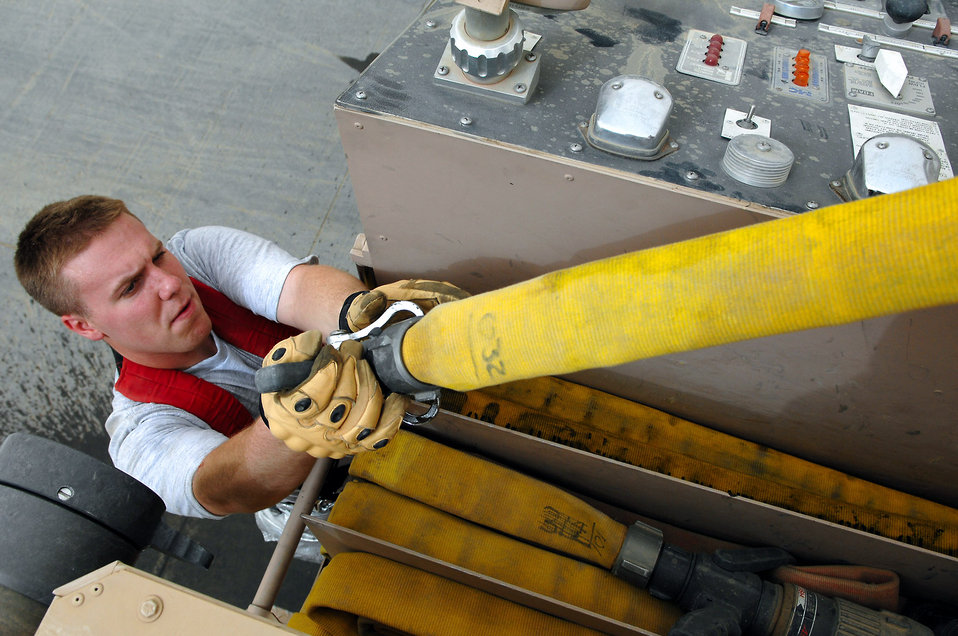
Firefighting is a joint venture

Airman 1st Class Adam Baumgardner wraps up a hose after completing advancement and pump training April 29 at Balad Air Base, Iraq. Training on a daily basis helps firefighters stay mission ready at all times. The fire station on Balad AB is composed of both Army and Air Force members who work jointly to respond to fires and emergency situations that allows for seamless coordination of efforts when responding to emergencies. Airman Baumgardner is a 332nd Expeditionary Civil Engineer Squadron firefighter deployed from Malmstrom Air Force Base, Mont.